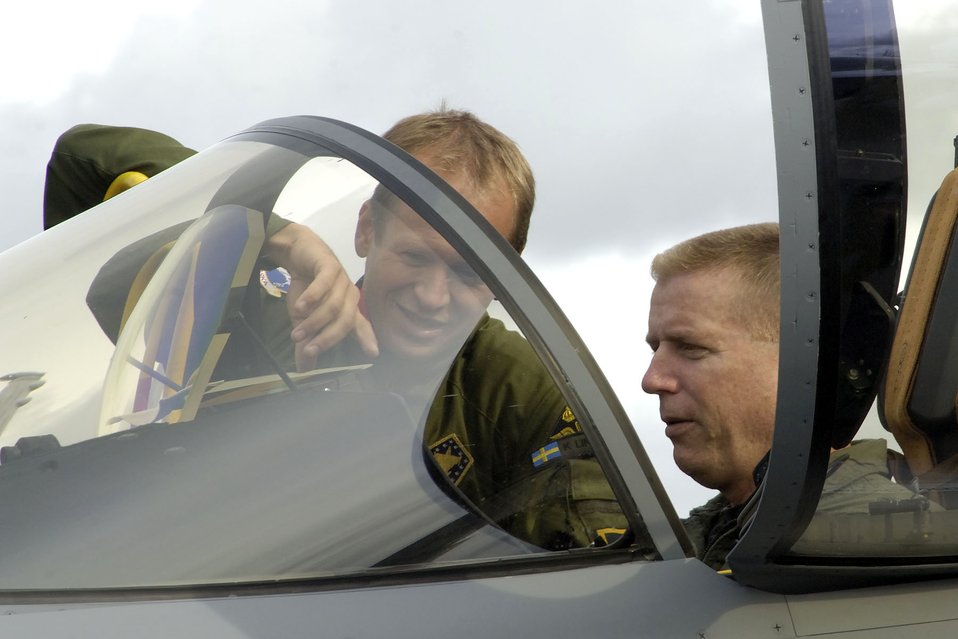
Transformation redefines multi-national exercise

Swedish Lt. Col. Ken Lindburg shows Col. Rusty Cabot the new JAS-39 Gripen aircraft during Exercise Cooperative Cope Thunder at Eielson Air Force Base, Alaska, on July 31. Colonel Lindburg is the detachment commander for the Swedish Air Force Tango Red Gripen squadron. Colonel Cabot is the 35th Air Expeditionary Wing commander.